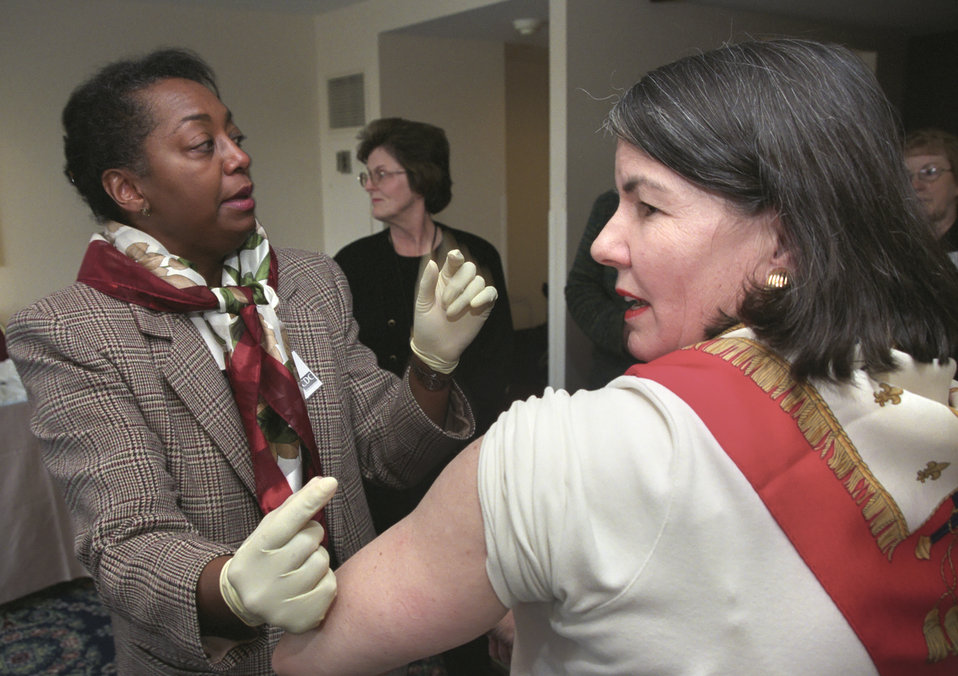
CDC Clinician, Gloria Brynam, RN, (Left), demonstrates proper vaccine application on CDC clinician, Melanie King, RN.